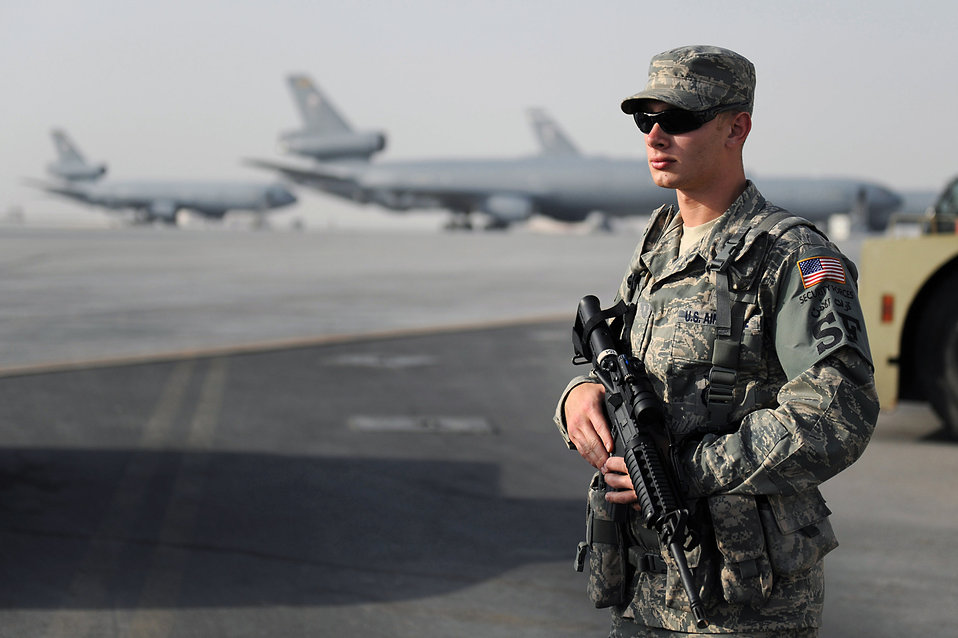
Don't pass this point

Airman 1st Class Nicholas Krom stands at his post March 21 on the flight line at an air base in Southwest Asia. Airman Krom, a member of the base's security forces team, is deployed from the 48th Security Forces Squadron at Royal Air Force Lakenheath, England.